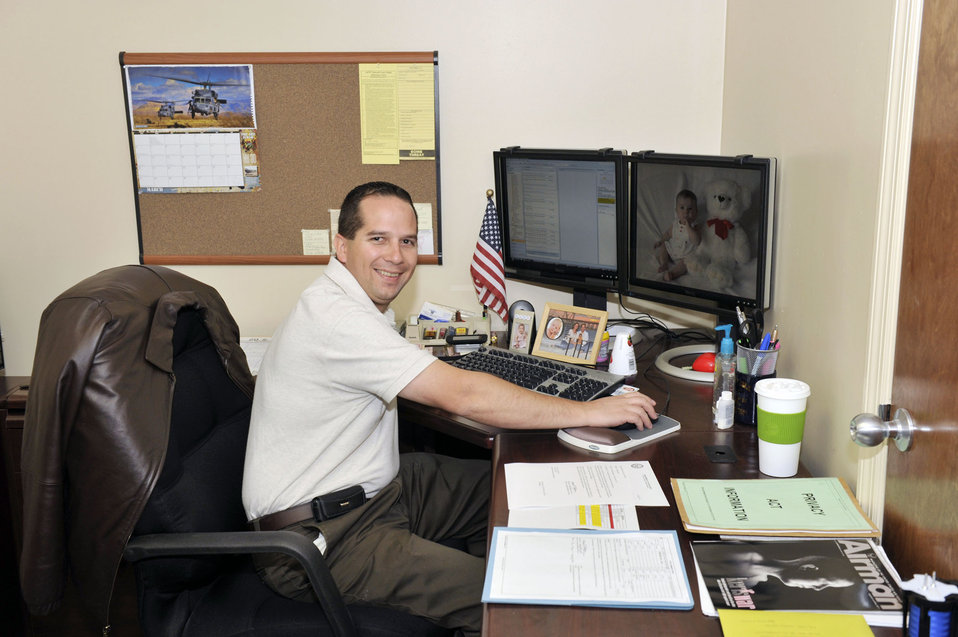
Wounded warrior program

Gunar Moschner, a former senior airman who was severely injured while deployed to Southwest Asia, now works with the 325th Mission Support Group at Tyndall Air Force Base, Fla. Using the Air Force's Wounded Warrior Employment Program, Mr. Moschner was able to obtain a job as an Air Force civilian, after he medically separated from the service.